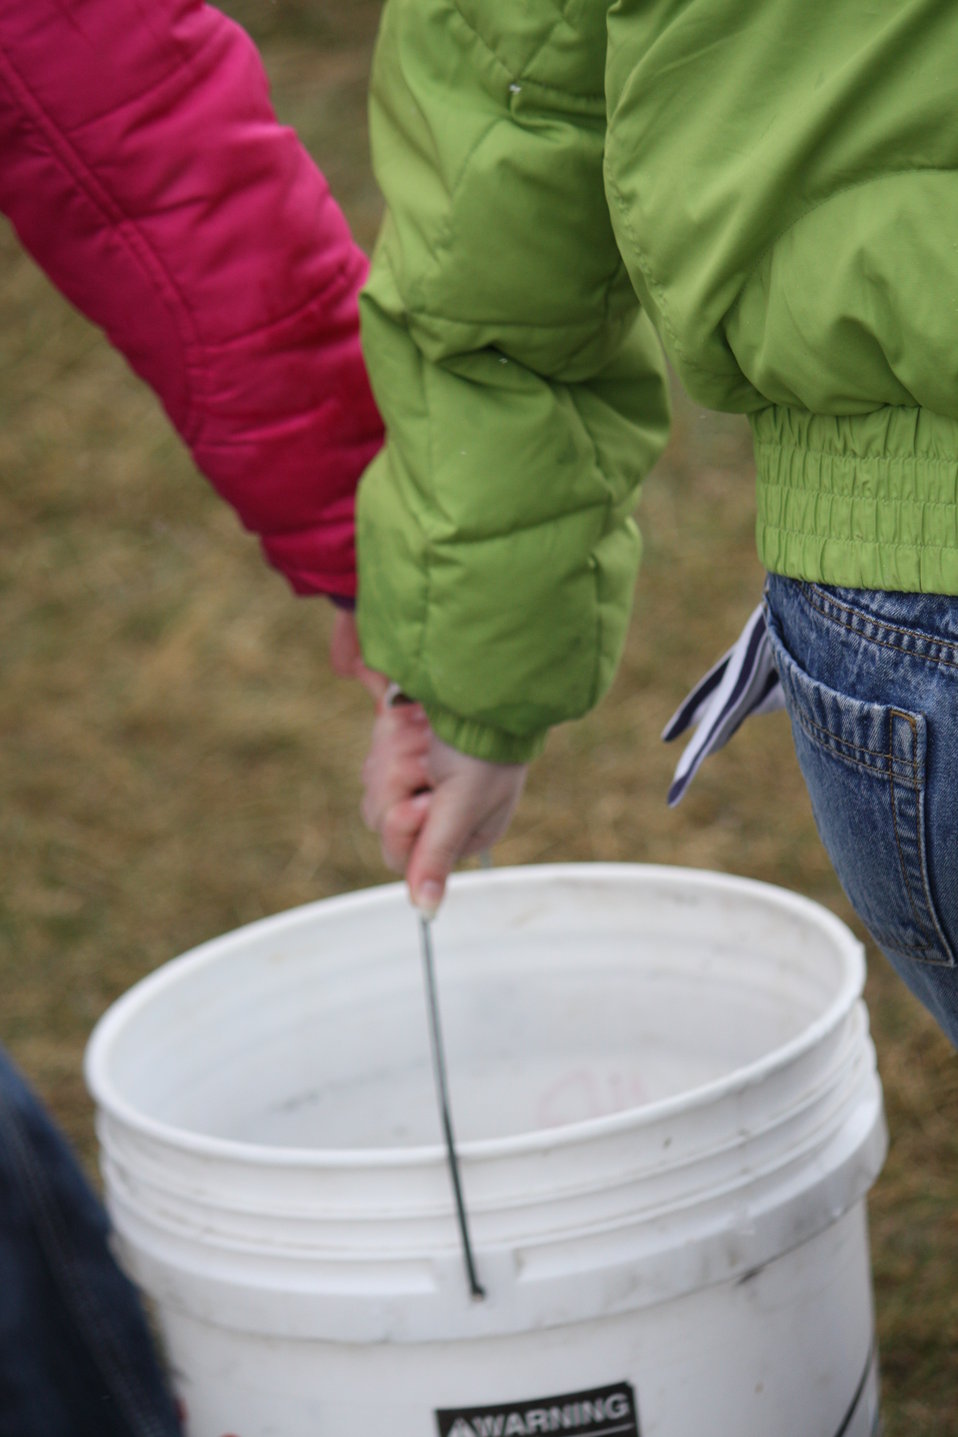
Buckets of Fish Fun

Creston National Fish Hatchery staff, with the help of these young girls, carry buckets of rainbow trout to a nearby pond.

Location: Creston National Fish Hatchery

Credit: Evie Bradley / USFWS

Photo Contest Entry #104